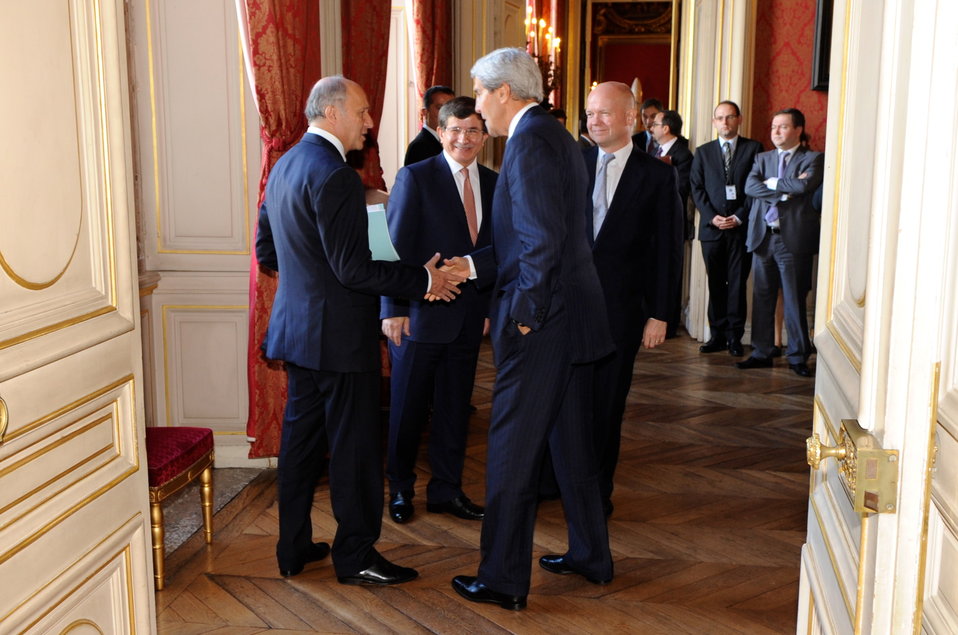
Secretary Kerry Says Goodbye To Fellow Ministers

U.S. Secretary of State John Kerry says goodbye to French Foreign Minister Laurent Fabius, Turkish Foreign Minister Ahmet Davutoglu, and British Foreign Secretary William Hague following a meeting at the Ministry of Foreign Affairs in Paris on September 16, 2013.